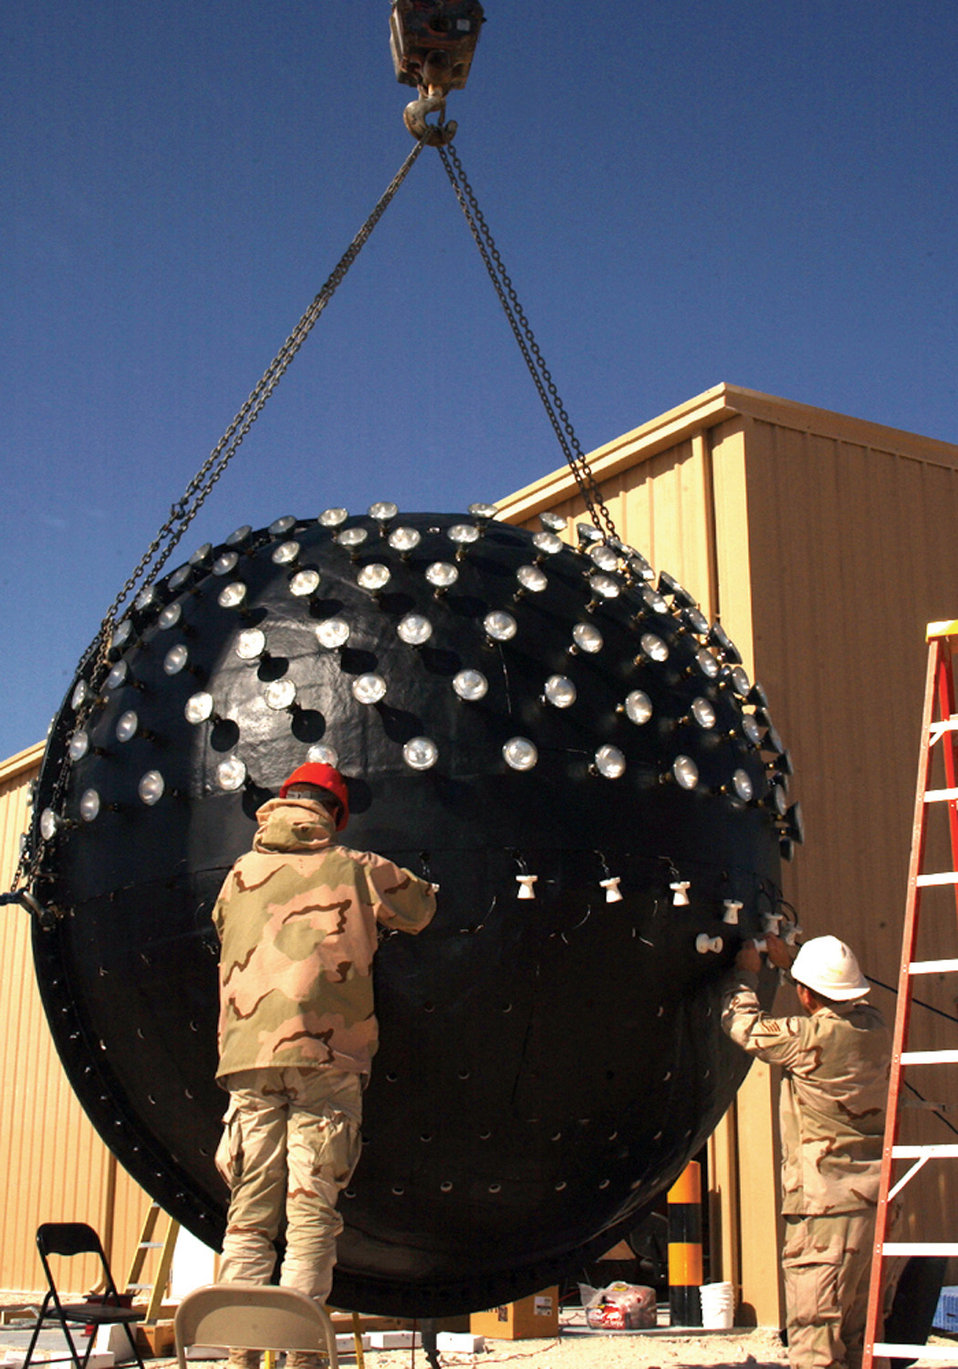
Airmen drop the ball

SOUTHWEST ASIA (AFPN) -- Airmen of the 379th Expeditionary Civil Engineering Squadron install lights into the New Year's Eve Ball they built. The ball has 417 lights. They built it in about 72 hours. It was suspended approximately 100 feet in the air and lowered from a crane as the crowd counted down the seconds until 2006. The squadron's version of the Times Square tradition is larger and heavier than the New York version.